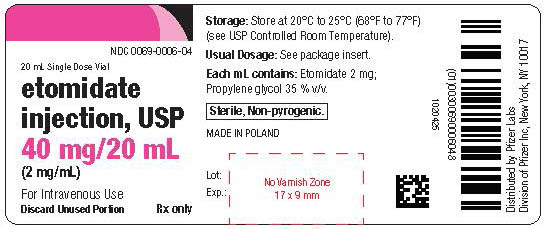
RECALLED – Etomidate Injection, 2mg/mL

February 19, 2014 – Product Recall – Agila Specialties Private Limited Initiates Voluntary Nationwide Recall of 10 Lots of Etomidate Injection 2 mg/mL – 10 mL and 20 mL due to the Presence of Particulate Matter and/or Illegible and Missing Lot Number and/or Expiry Date.